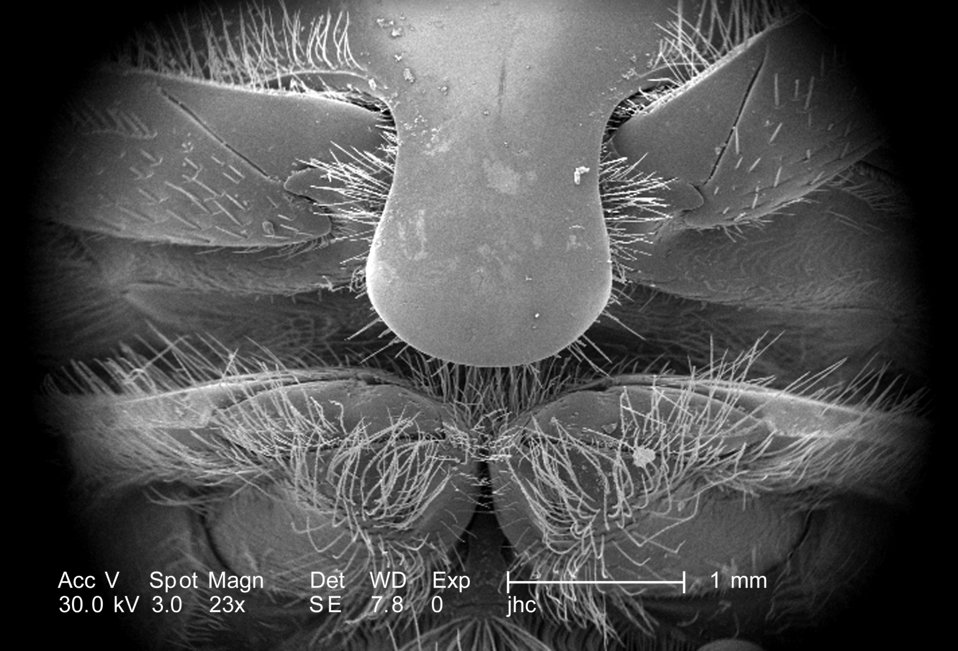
Under a low magnification of only 23x, this scanning electron micrograph (SEM) depicted some of the anatomical relationships found on the ventral surface of this adult 'figeater' beetle's, Cotinis mutabilis thorax, which is the body region situated between the insect's head and abdomen. In this particular view, two of the three pairs of legs may be seen emanating adjacent to the 'prosternal process', which is a posterior extension of the sternum. The insect leg is comprised of a variable number of segments, however, there are usually six which predominate, including the most proximal, i.e., attaching the leg to the thorax, coxa, followed by the trochanter, femur, tibia, tarsus, and pretarsus, which in the case of this beetle is a claw, well visualized in PHIL 9943, 9944, and 9945.